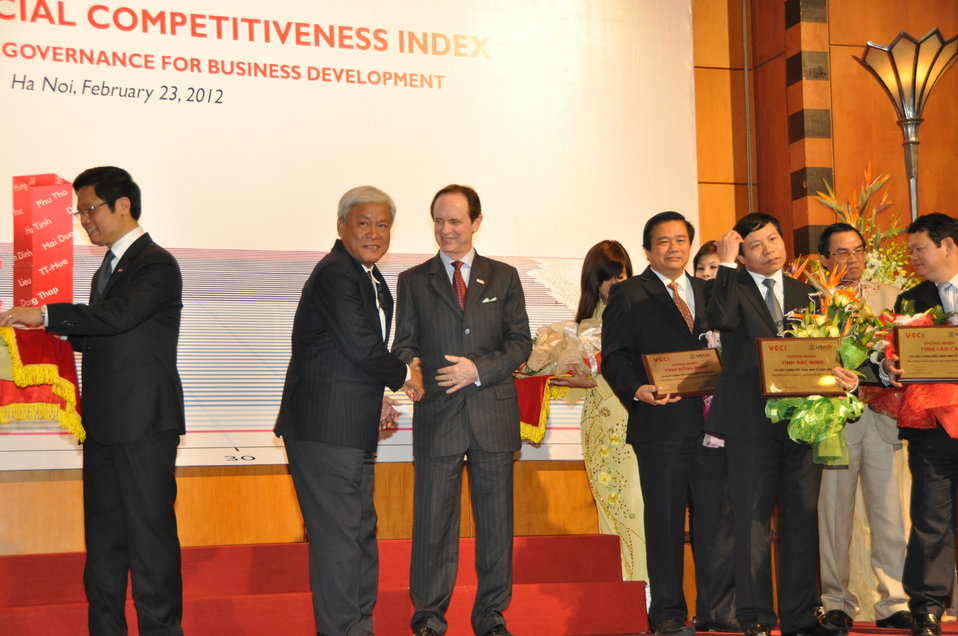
Provincial Competitiveness Index 2011 Launch